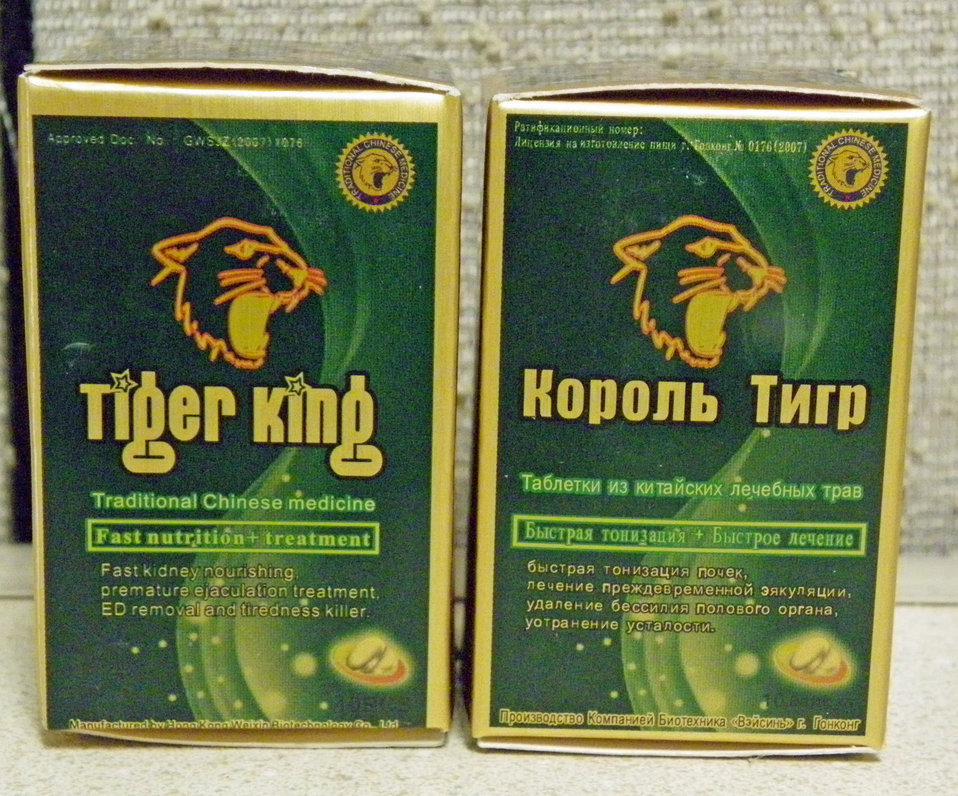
Tiger King

January 28, 2014 - The FDA is advising consumers not to purchase or use Tiger King, a product promoted and sold as a dietary supplement for sexual enhancement. The product was found to contain undeclared sildenafil.